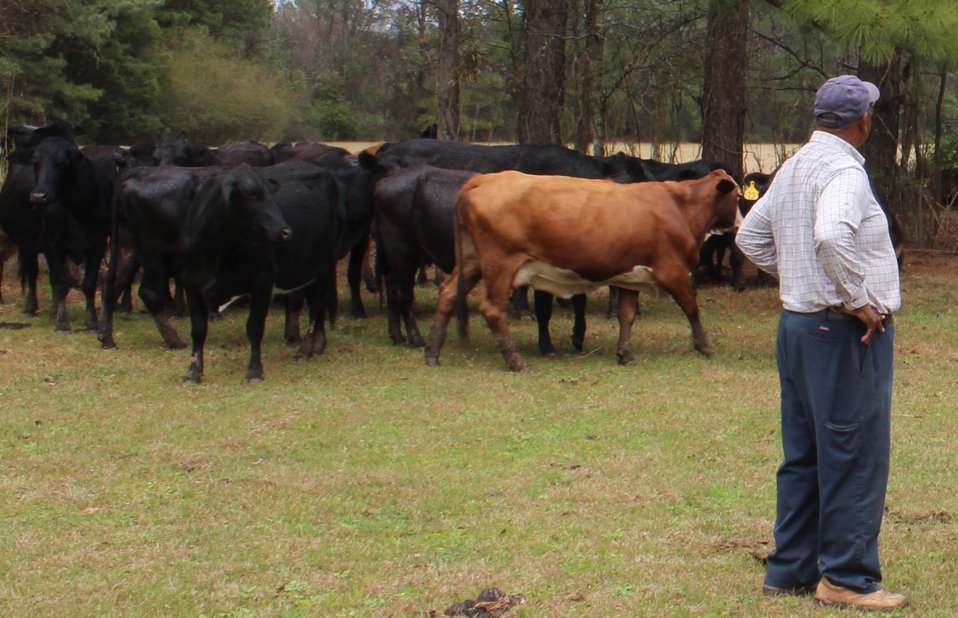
Photo2

Angus beef cattle graze on the Leake County, Miss. ranch.